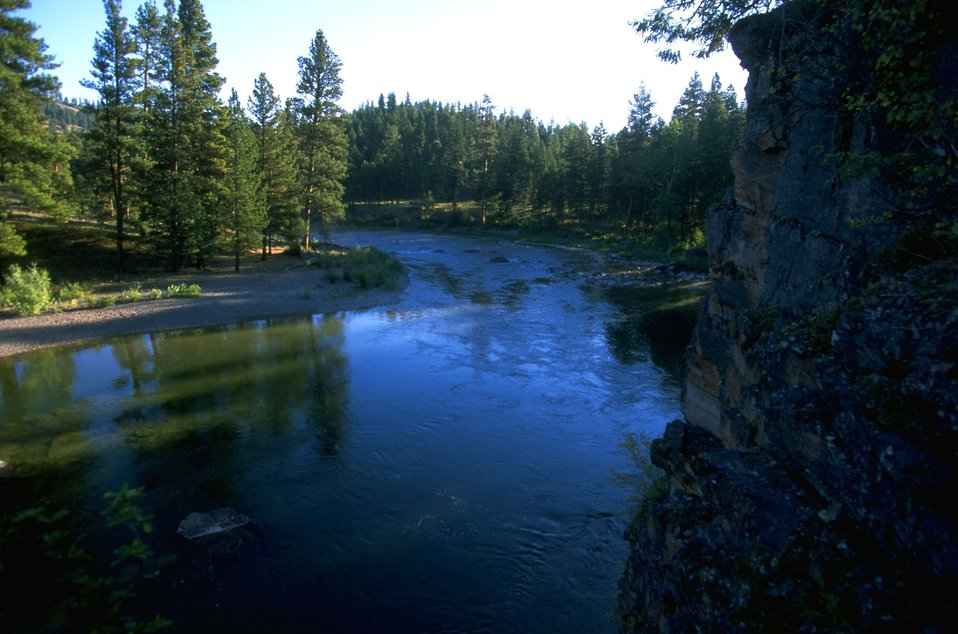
Red Rocks area of Blackfoot River in the early morning